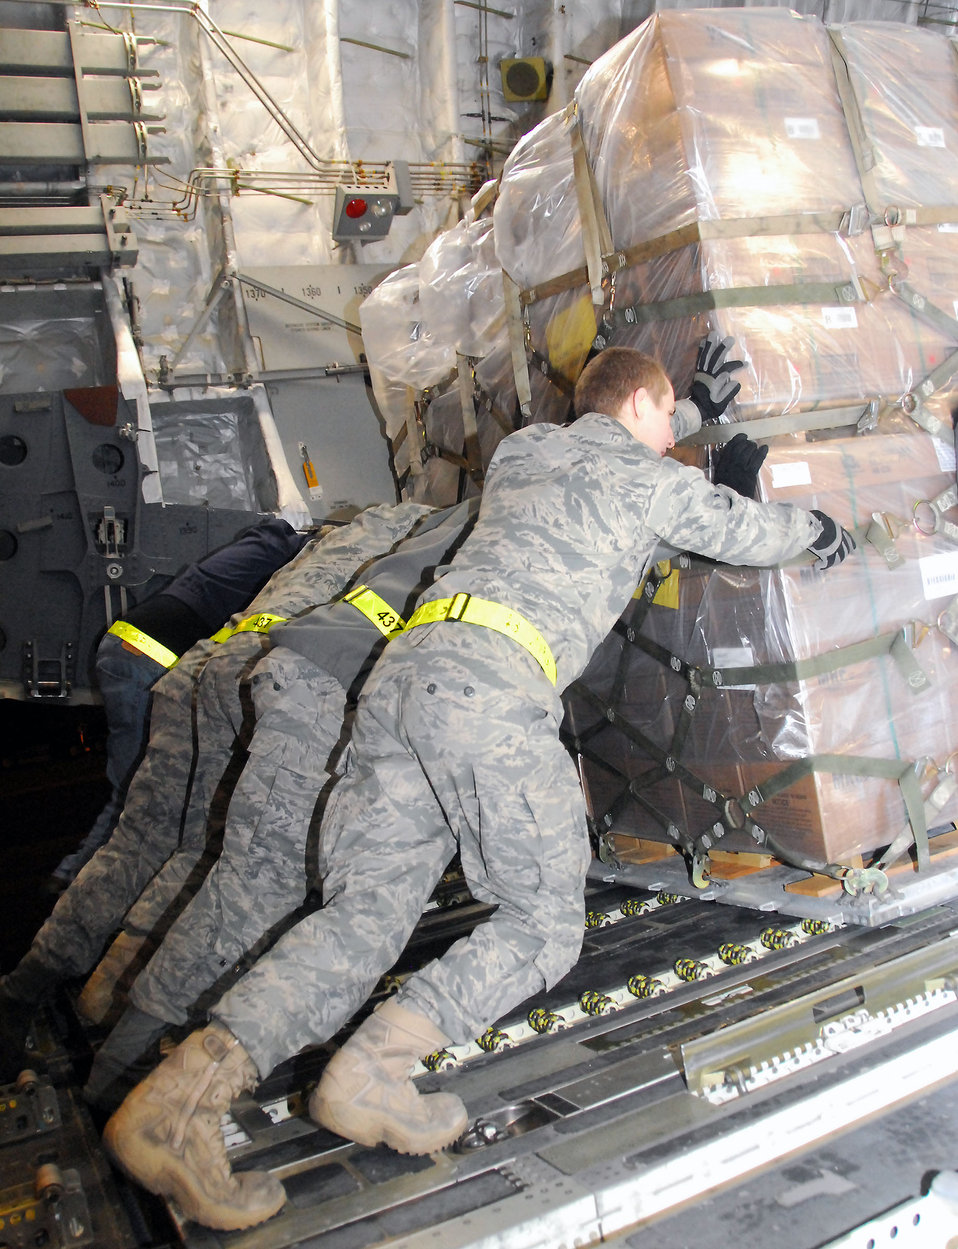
Charleston aerial porters load food, water for Haiti

Air transportation specialists with the 437th Aerial Port Squadron at Charleston Air Force Base, S.C., work together Jan. 18, 2010, to load a pallet of food onto a C-17 Globemaster III from McChord AFB, Wash. The pallet of food is part of a 116,000-pound shipment of food and water to aid victims of the recent earthquake in Haiti.